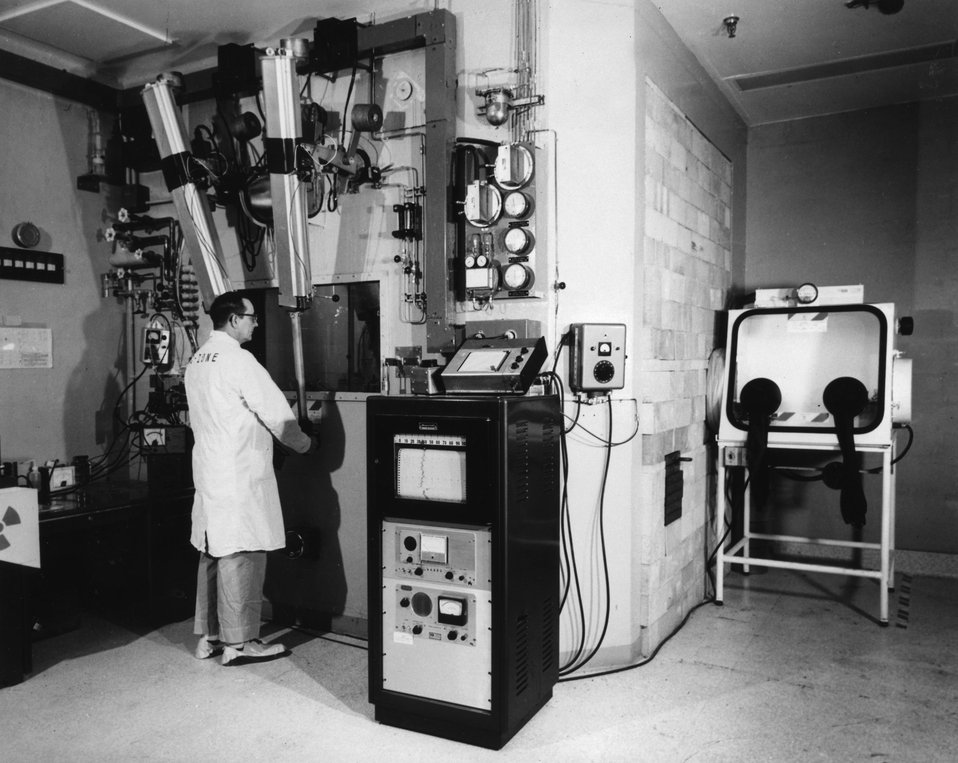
Shielded facilities are required for handling purified californium product from irradiation High Flux Isotope Reactor (HFIR) targets. c. 1972